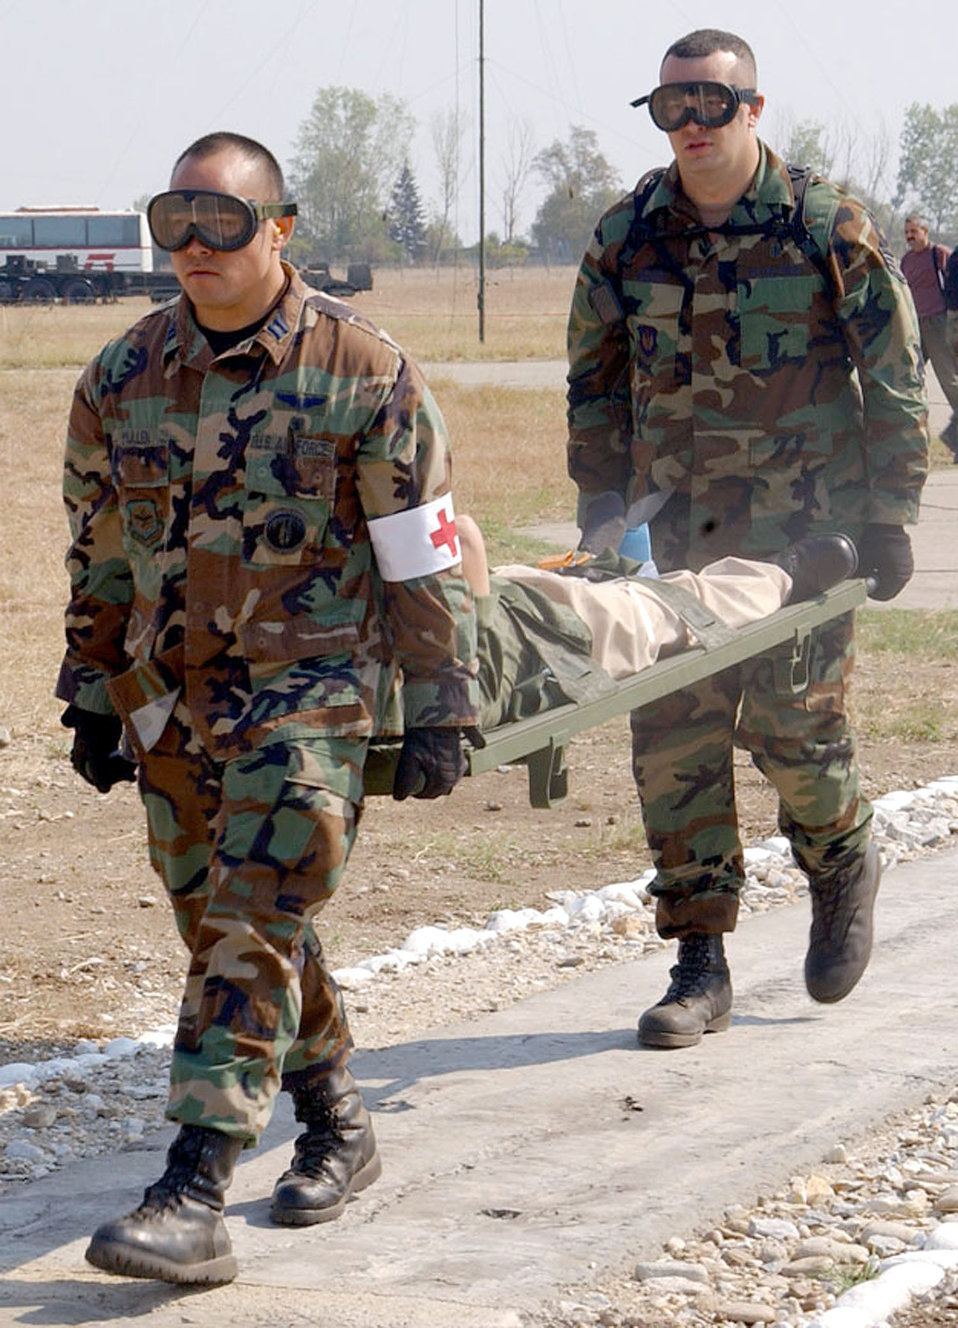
Cooperative Key 2003

PLOVDIV, Bulgaria -- Capt. Michael Mullen (front) and Staff Sgt. Joseph Mooney carry a patient from the medical staging facility at Krumovo Airport here Sept. 8 as part of Exercise Cooperative Key 2003. The exercise is a multinational exercise designed to enhance the interoperability of NATO and partner nation air forces through cooperation and familiarization of the organization's procedures. Mullen and Thackery are assigned to the 86th Aeromedical Evacuation Squadron at Ramstein Air Base, Germany.